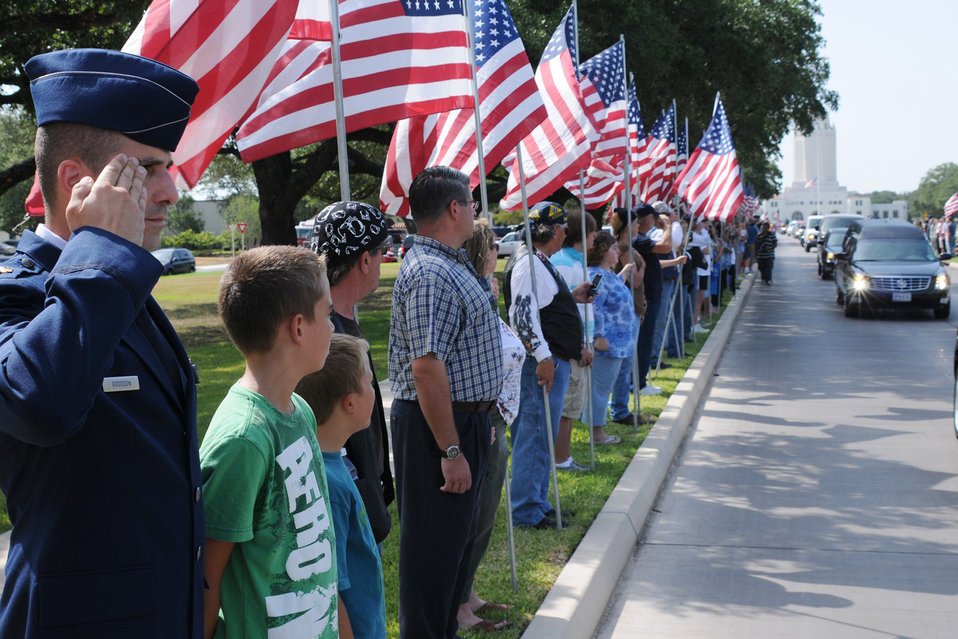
Hundreds show for fallen Marine's return home

Maj. J.T. Goodson salutes the motorcade carrying the casket of Marine Corps Lance Cpl. Brandon Lara as his sons, Hunter (second from left) and Logan, watch the vehicles make their way down Harmon Drive July 26 at Randolph Air Force Base, Texas.